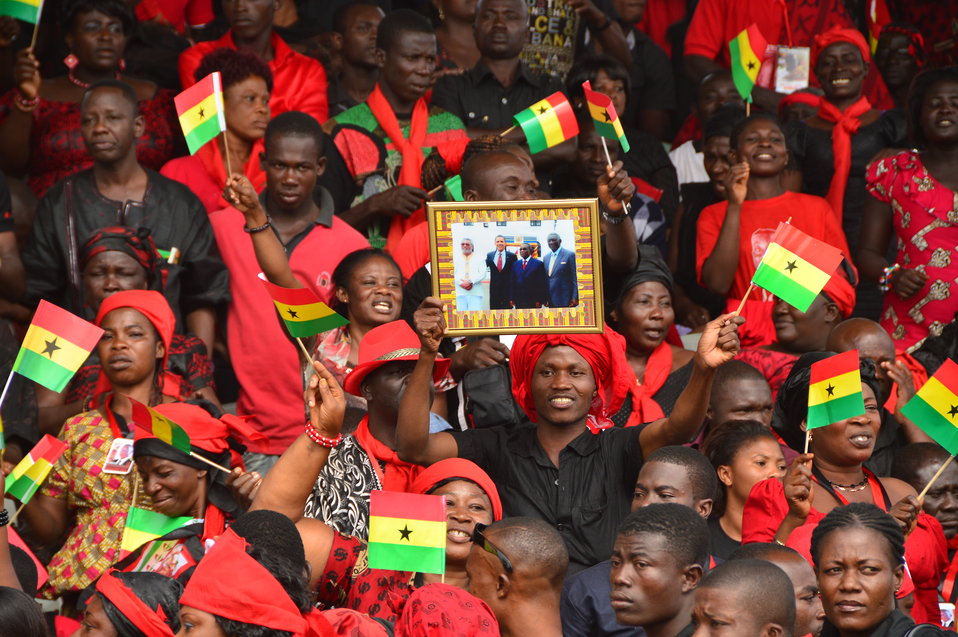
Mourners Cherish the Memory of President Obama's 2009 Visit to Ghana

Mourners cherish the memory of President Barack Obama's 2009 visit with President John Atta Mills and Ghana's two prior presidents at the State Funeral of President Mills in Accra, Ghana, on August 10, 2012.